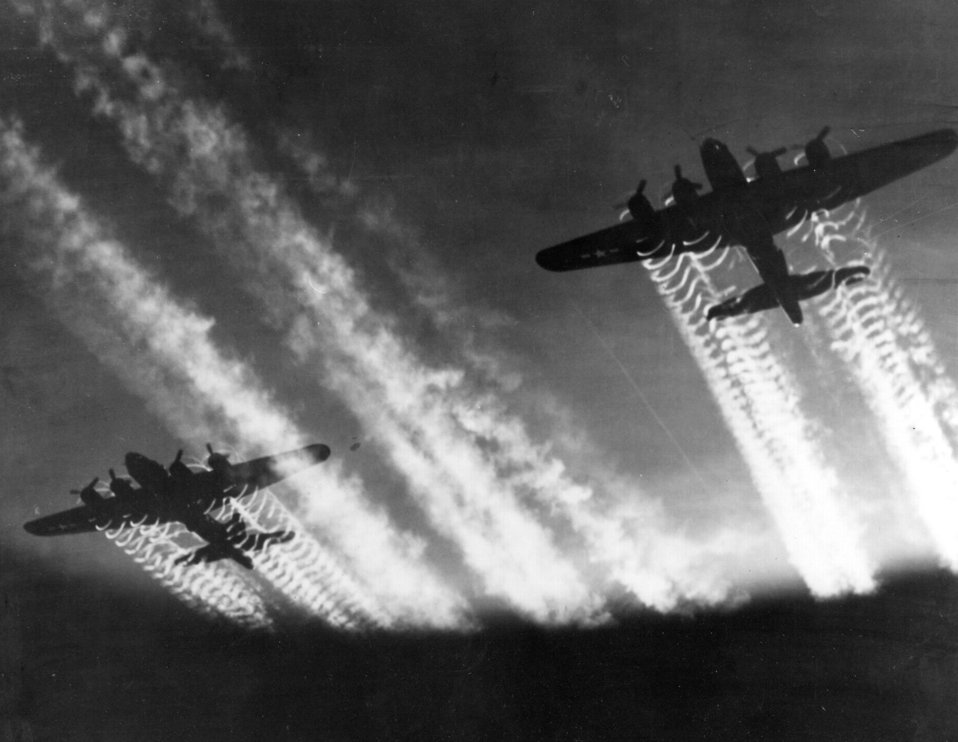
World War II

1940s -- The vapor trails from two Boeing B-17 Flying Fortress aircraft light up the night sky. The B-17 prototype first flew on July 28, 1935.